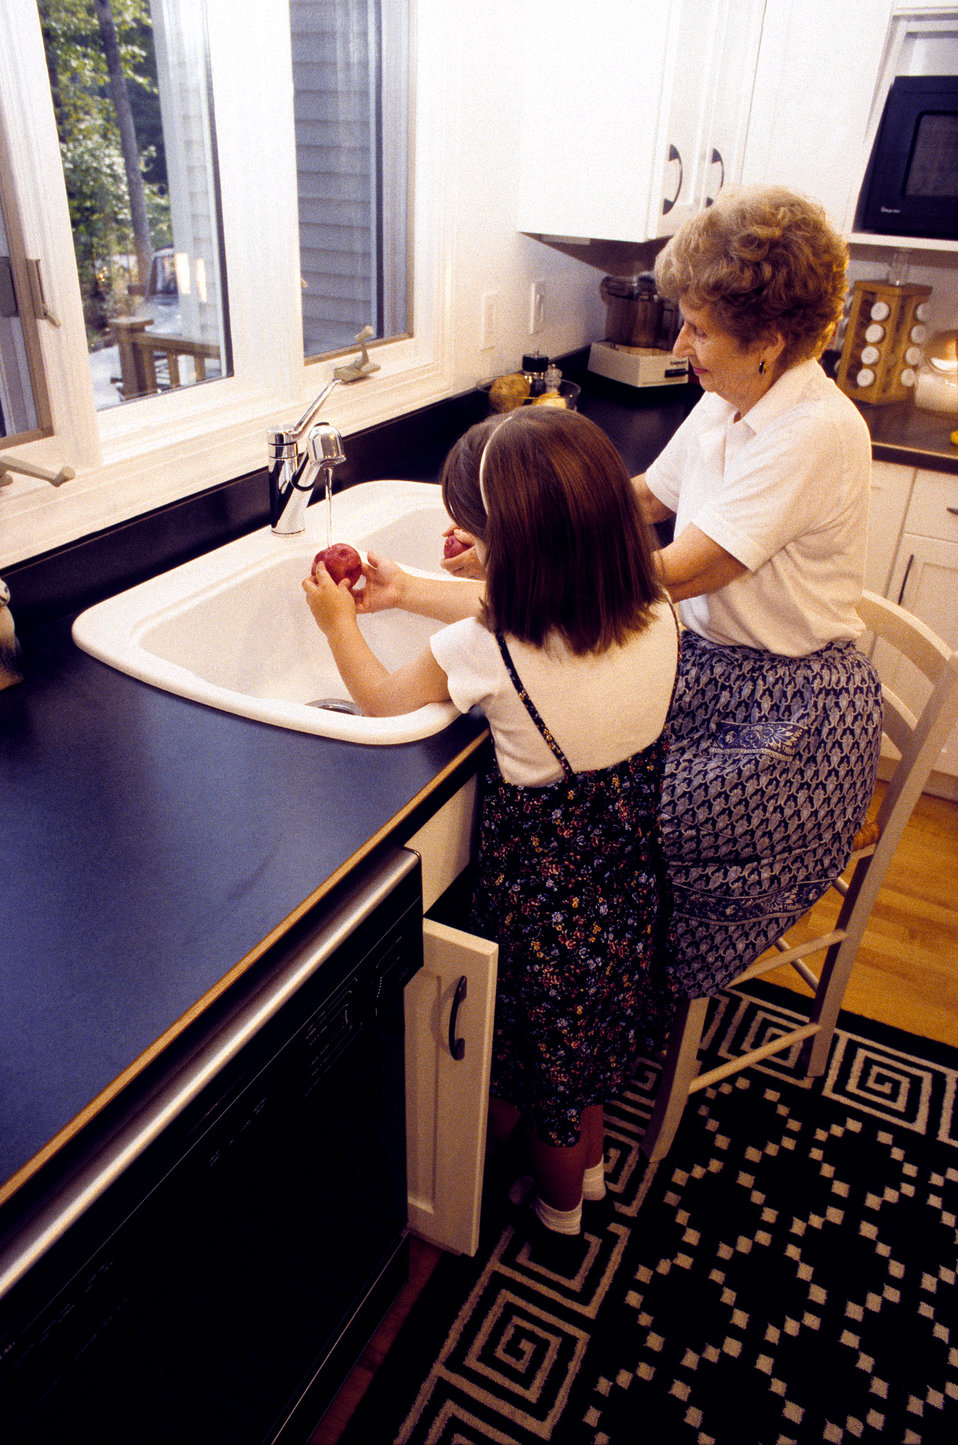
: This grandmother and her granddaughter were in a customized kitchen outfitted with adaptable cabinetry, which allowed the elderly woman to pull her seat closely to the sink. While together the two prepared food, the woman's knees could be pulled up beneath the sink, so as to be accommodating to her seated food preparation activities. Adaptable features such as this can facilitate intergenerational activities by providing flexibility for the needs of different users, including those with, or without mobility or visual impairments.